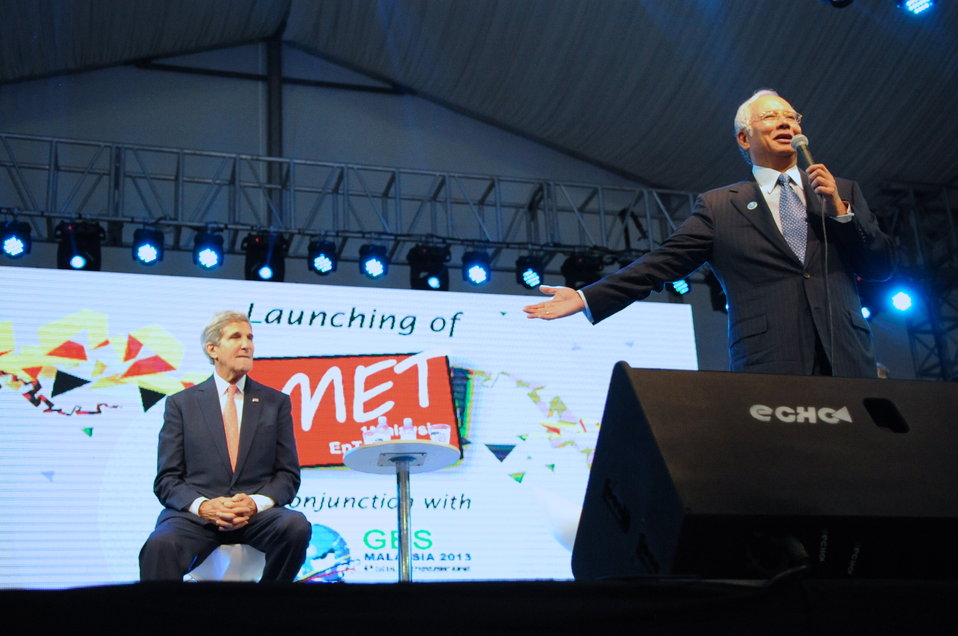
Prime Minister Najib Addresses 1MET Kick-Off

Malaysian Prime Minister Najib Razak salutes U.S. Secretary of State John Kerry before 4,700 young people gathered for the 1MET Kick-Off, held as part of the Global Entrepreneurship Summit in Kuala Lumpur on October 11, 2013.